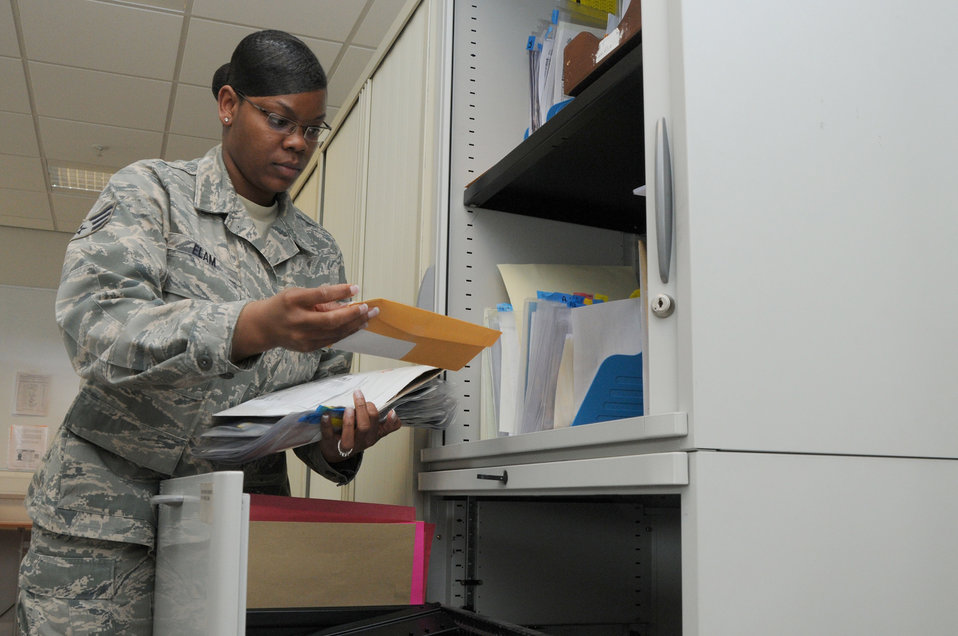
Operation: Odyssey Dawn

U.S. Air Force Senior Airman Erica Elam, 48th Force Support Squadron passport agent, files applications at the passport office at RAF Lakenheath, England, March 23. Airman Elam was nominated for a liberty spotlight because she portrayed the core value of 'Service Before Self'.